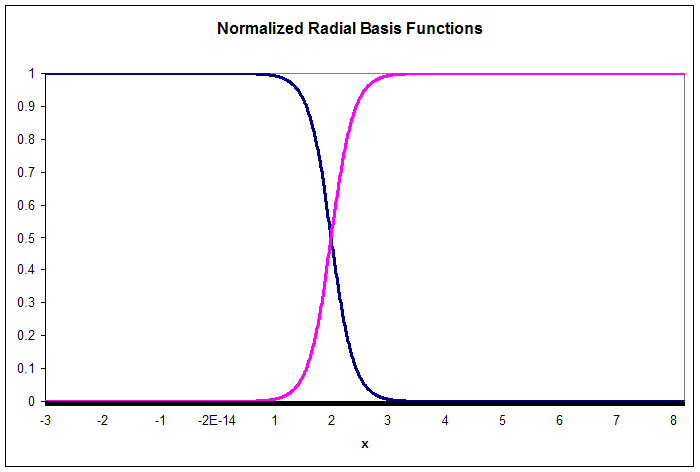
Radial basis function - Figure 3: Two normalized radial basis functions in one input dimension. The basis function centers are located at c1 = 0.75 and c2 = 3.25.